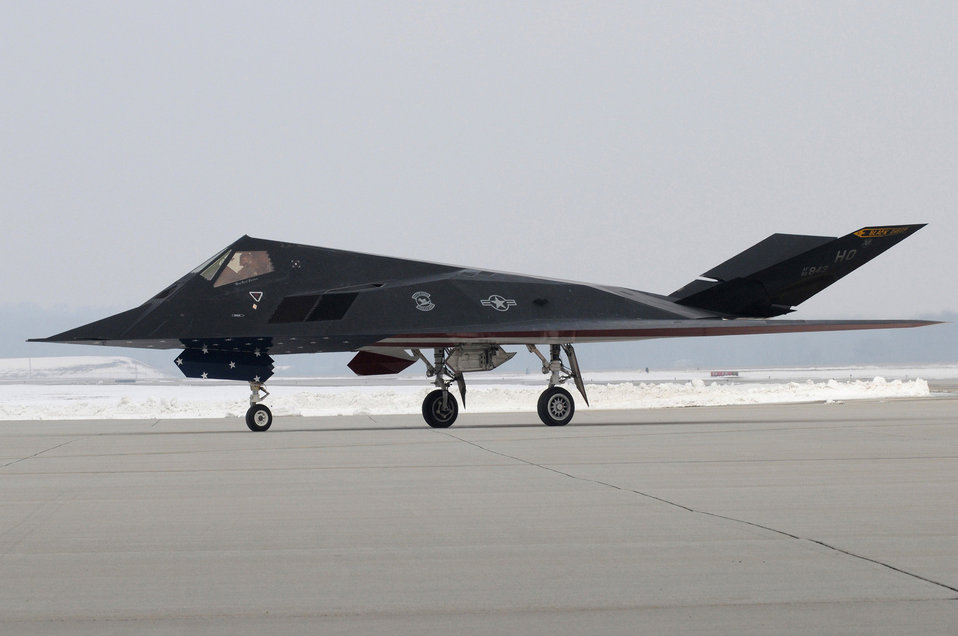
F-117 retires

An F-117 Nighthawk taxis into position during the F-117 Nighthawk farewell ceremony at Wright-Patterson Air Force Base, Ohio, March 11. The ceremony consisted of mulitple guest speakers, a piece by the Air Force Band of Flight and concluded with a single ship flyover.